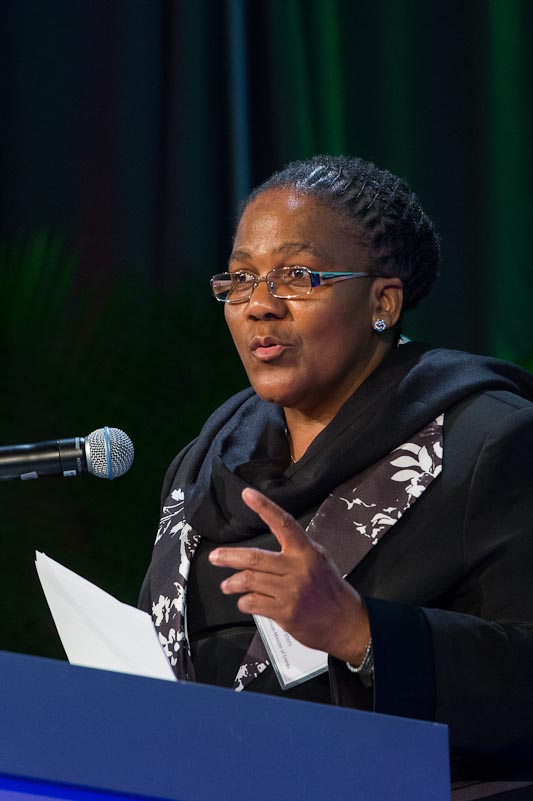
H.E. Dipuo Peters - Energy Minister in South Africa